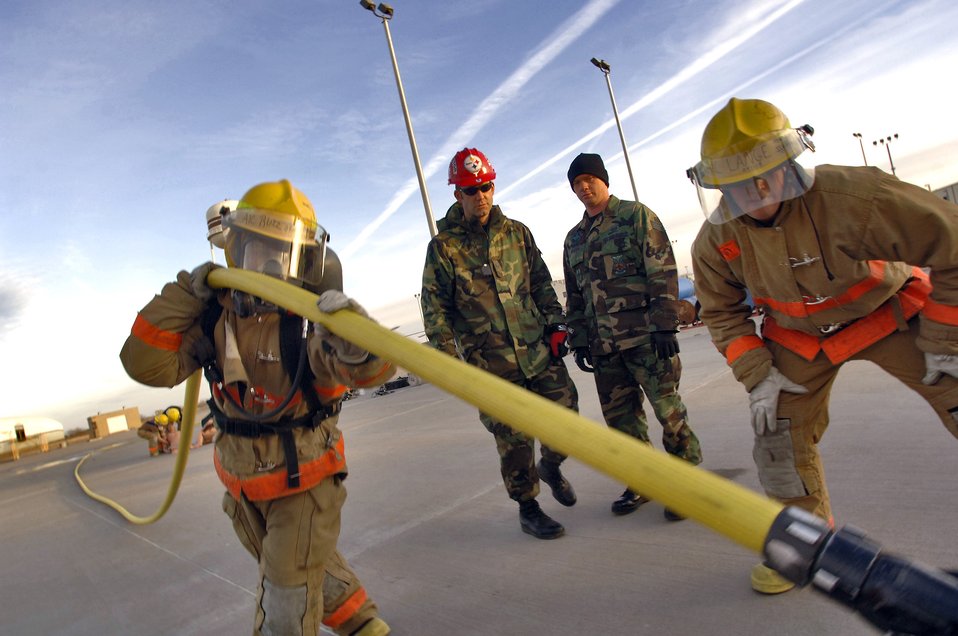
If you can't stand the heat...

GOODFELLOW AIR FORCE BASE, Texas (AFPN) -- Airman 1st Class Jose Ruiz pulls a charged hose line as part of the fireman's physical training evaluation. The entire evaluation must be completed in eight minutes. Airman Ruiz is from Ramstein, Germany.